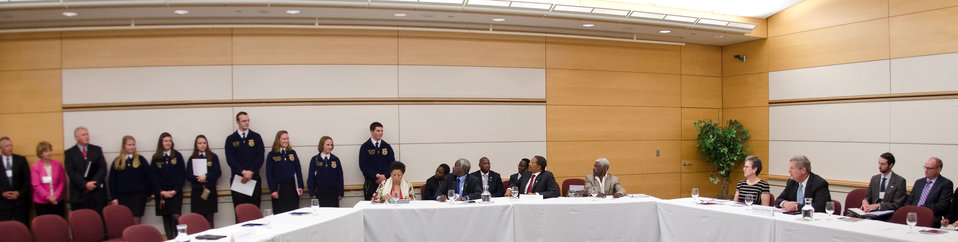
Agriculture Secretary Tom Vilsack introduces the FFA group he invited to attend the African Heads of State conference at the Ronald Reagan Federal Building in Washington, D.C., on Friday, May 18, 2012.